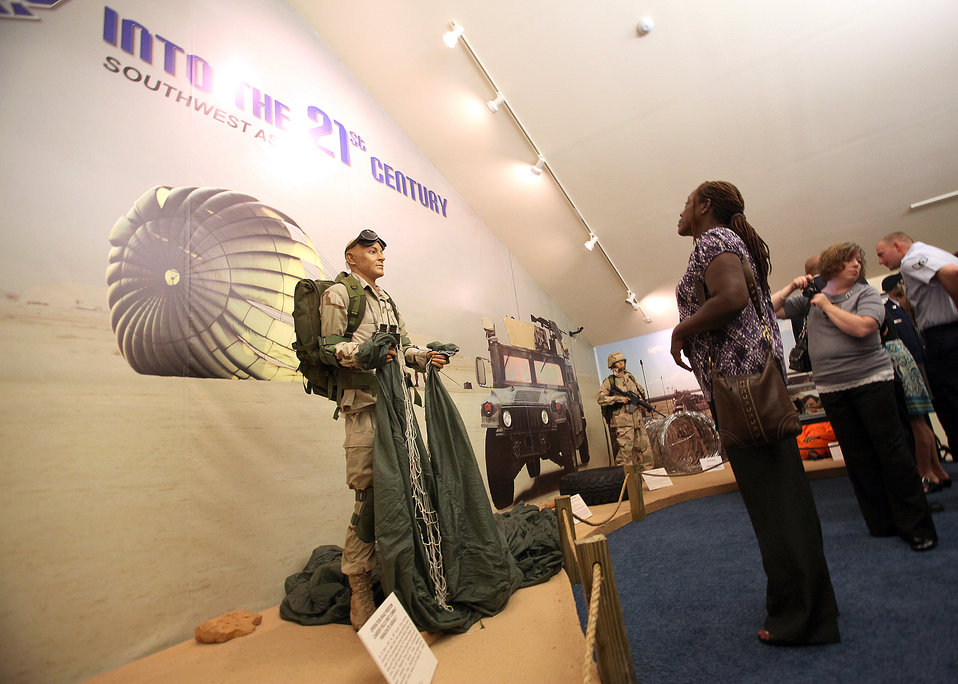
Chavis

Jackie Chavis looks at the new Air Force Security Forces Museum exhibit honoring the eight security forces Airmen killed in conflict since 2005. Mrs. Chavis's son, Airman 1st Class LeeBernard Chavis, is among the Airmen honored by the exhibit,